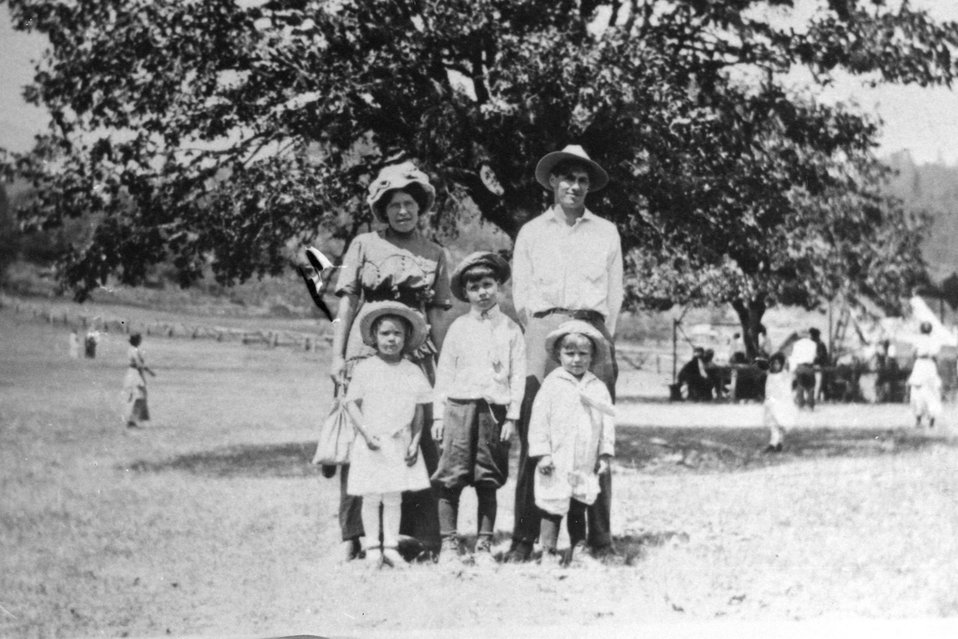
Leo and Viola Frye. Leslie, Elwin, and Mone.